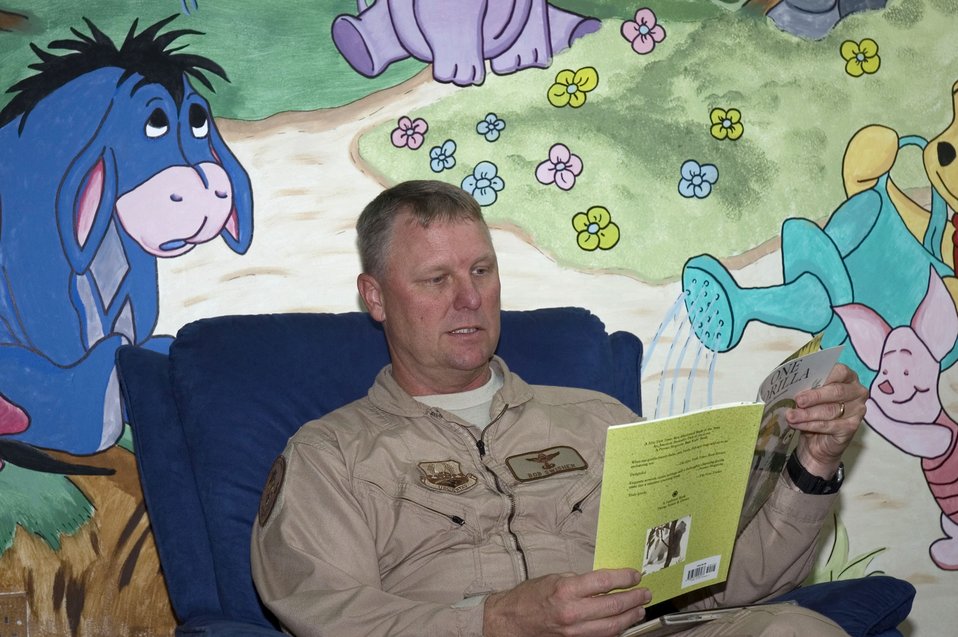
NCO puts artistic talents to work while deployed

Col. Robert Swisher reads the book